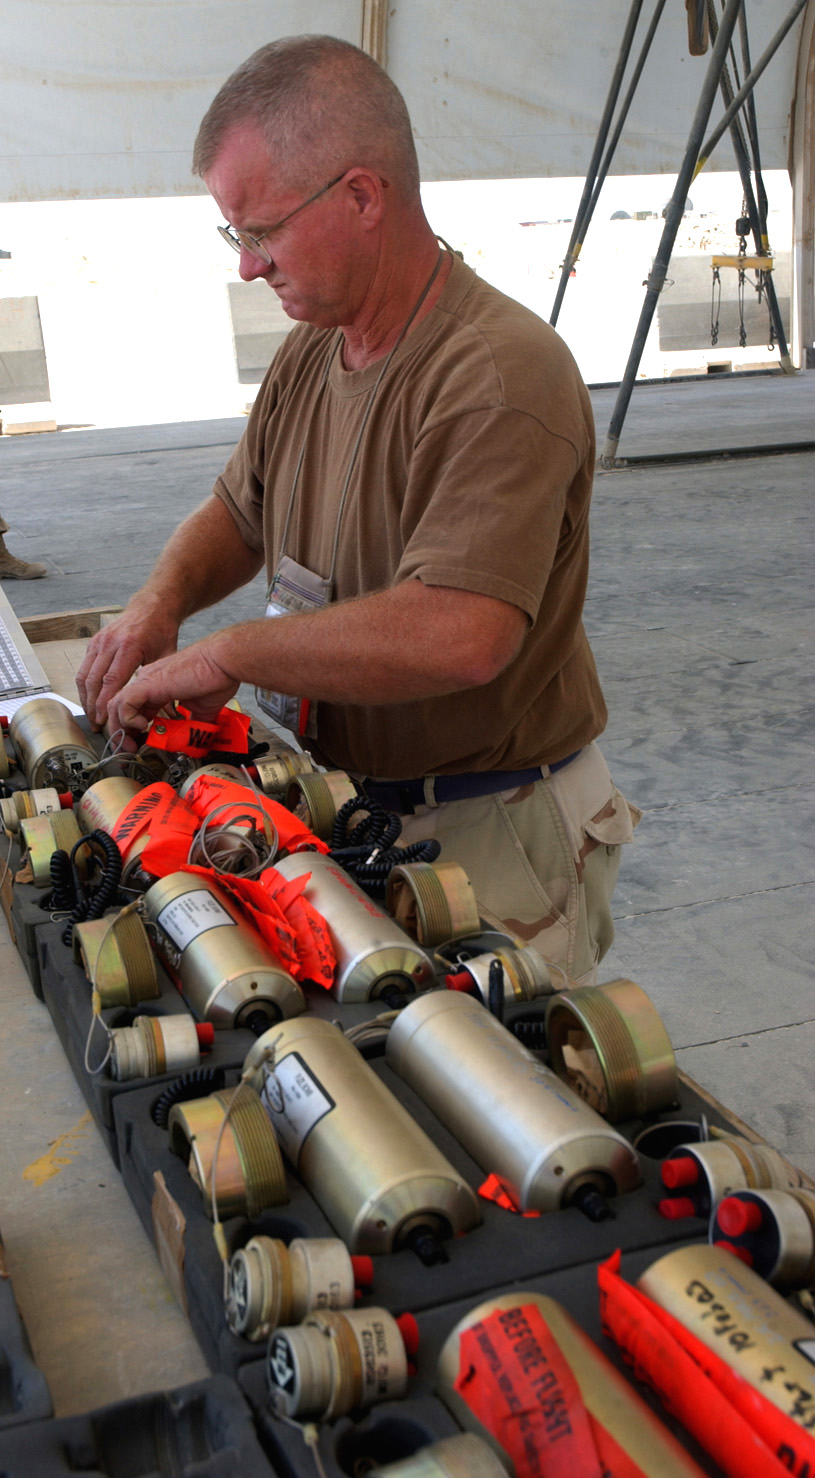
Detonators

SOUTHWEST ASIA -- Master Sgt. Steven Mears prepares detonators before he demonstrates how to build a bomb at a forward-deployed location. Sergeant Mears is assigned to 379 Expeditionary Maintenance Squadron and is deployed from Oklahoma Air National Guard's 125th Maintenance Squadron.